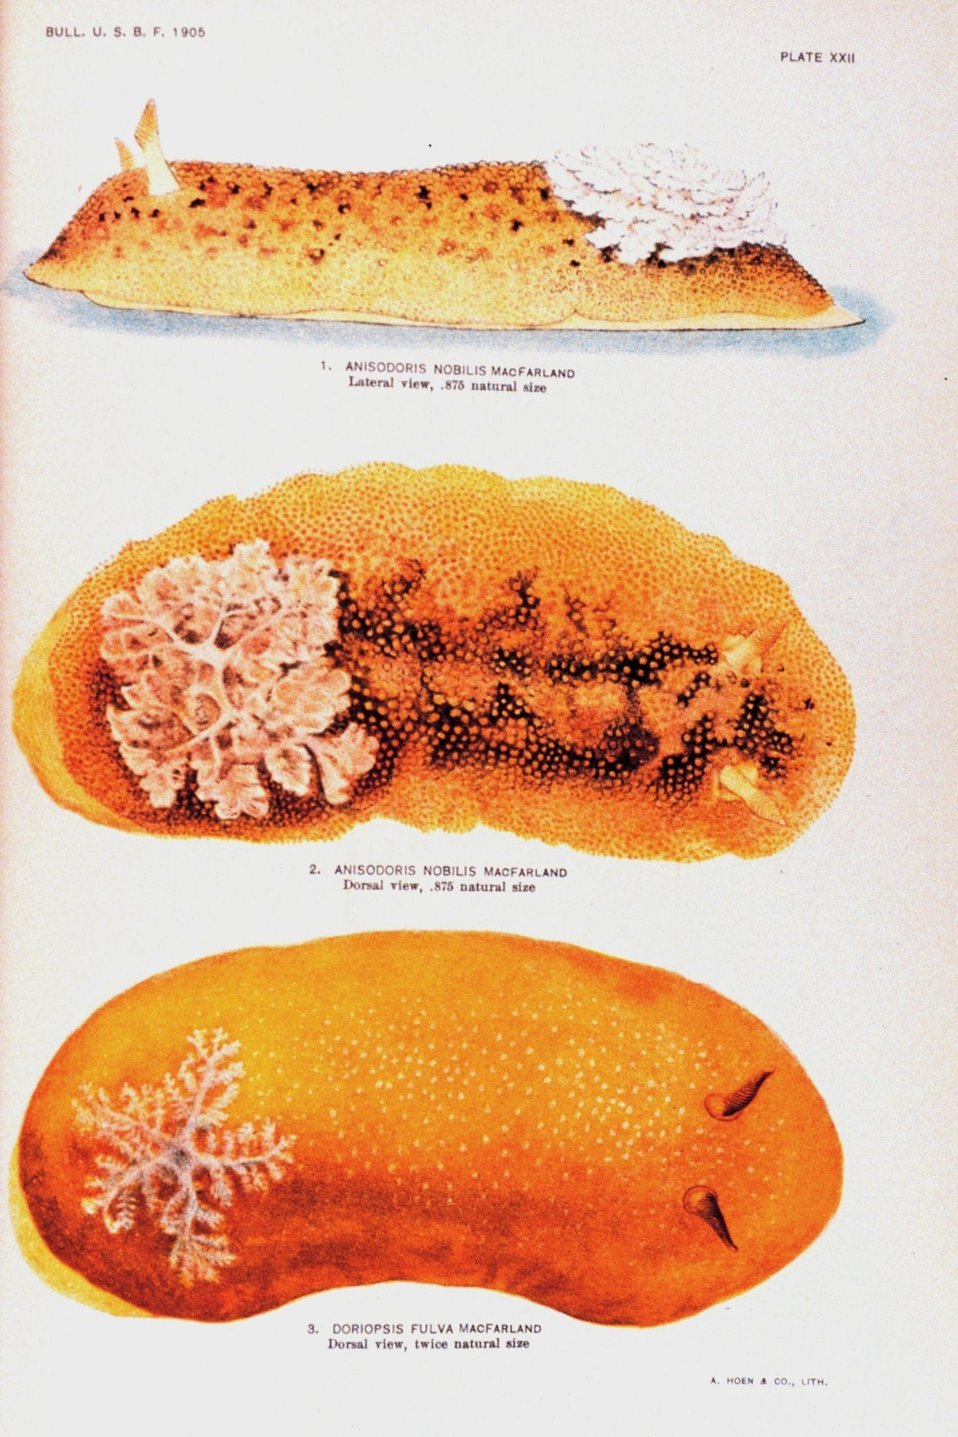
Nudibranchs. 1. Anisodoris nobilis MacFarland - Lateral view. 2. Anisodoris nobilis MacFarland -- Dorsal view. 3. Doriopsis fulva Macfarland -- Dorsal view. All views painted by Anna B. Nash of the Hopkins Seaside Laboratory. In: 'Opisthobranchiate Mollusca from Monterey Bay ....', Bulletin of the Bureau of Fisheries, Volume 25, 1905. P. 151, Plate XXII.